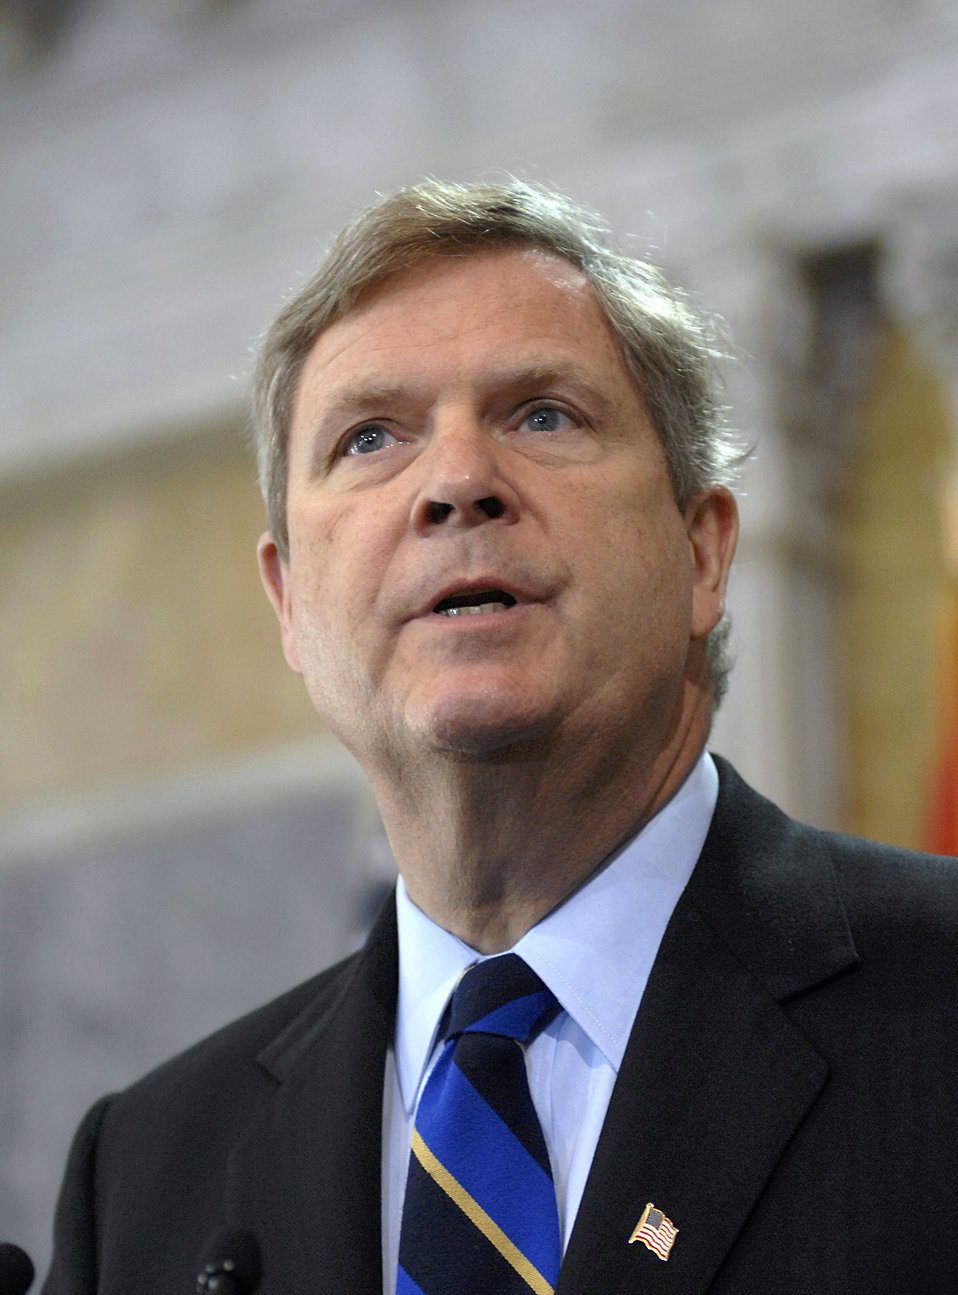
Announcement on International Commitment to Fight Global Hunger and Poverty, 4/22/10

Tom Vilsack, U.S. Department of Agriculture Secretary, speaks at announcement for international commitment to fight global hunger and poverty at Treasury Department April 22, 2010.